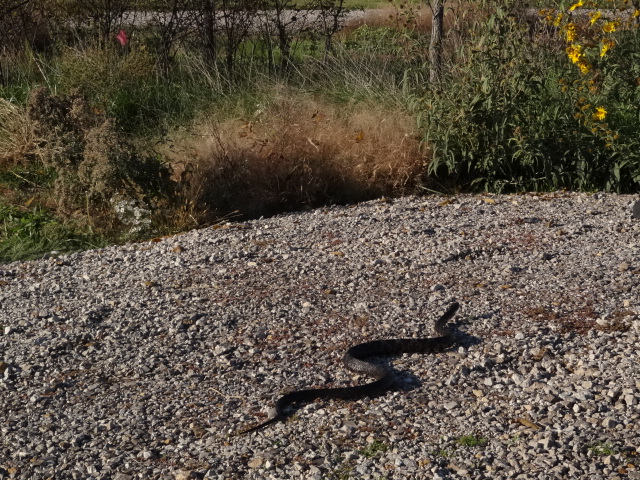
Black Rat Snake Sunning Itself at the Refuge

A camera shy refuge visitor scurries away.